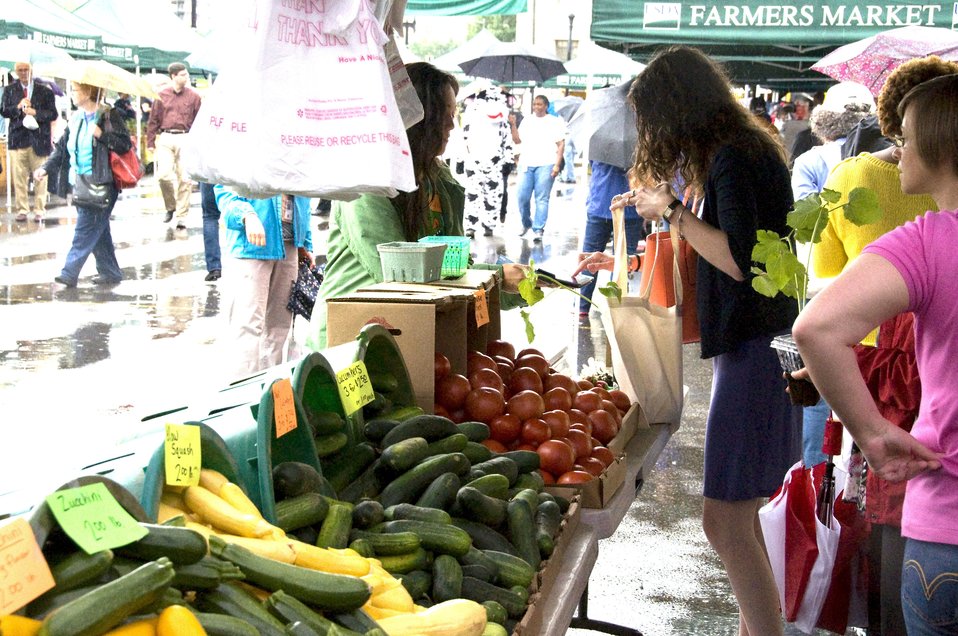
USDA Farmers Market Rainy Opening

Farmers market shoppers brave the rainy weather to get fresh produce.